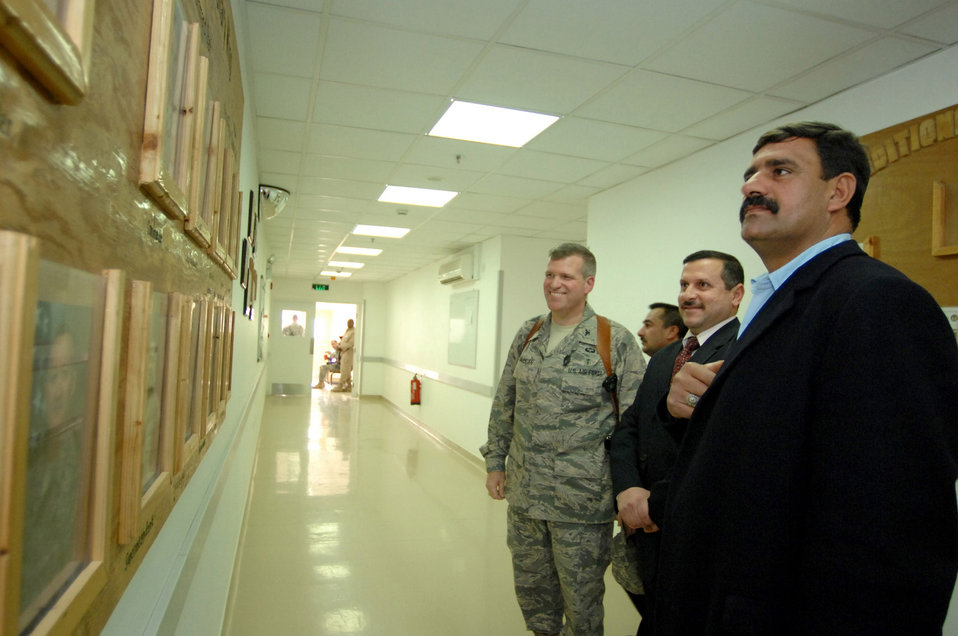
Iraqi leaders visit civilian IED victims at Air Force hospital

Local leaders from the city of Balad tour the Air Force Theater Hospital accompanied by Col. Timothy Halligan (left) Feb. 11 at Balad Air Base, Iraq. The men came to the hospital to visit Iraqi patients who were injured the previous day by a vehicle-borne improvised explosive device. Colonel Halligan is the 332nd Expeditionary Medical Group deputy commander and deployed from Lackland Air Force Base, Texas.